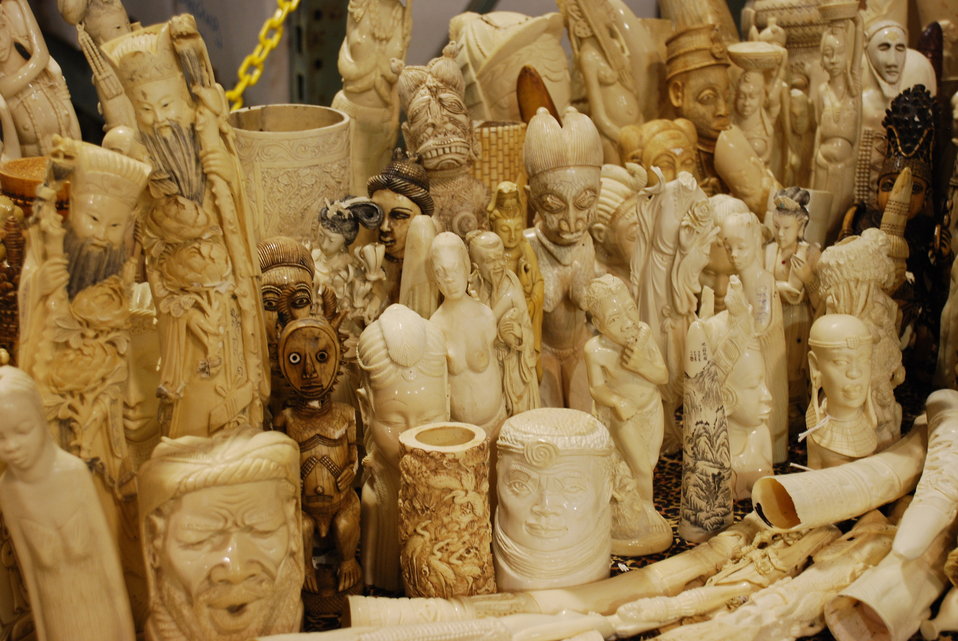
Ivory Crush 2013